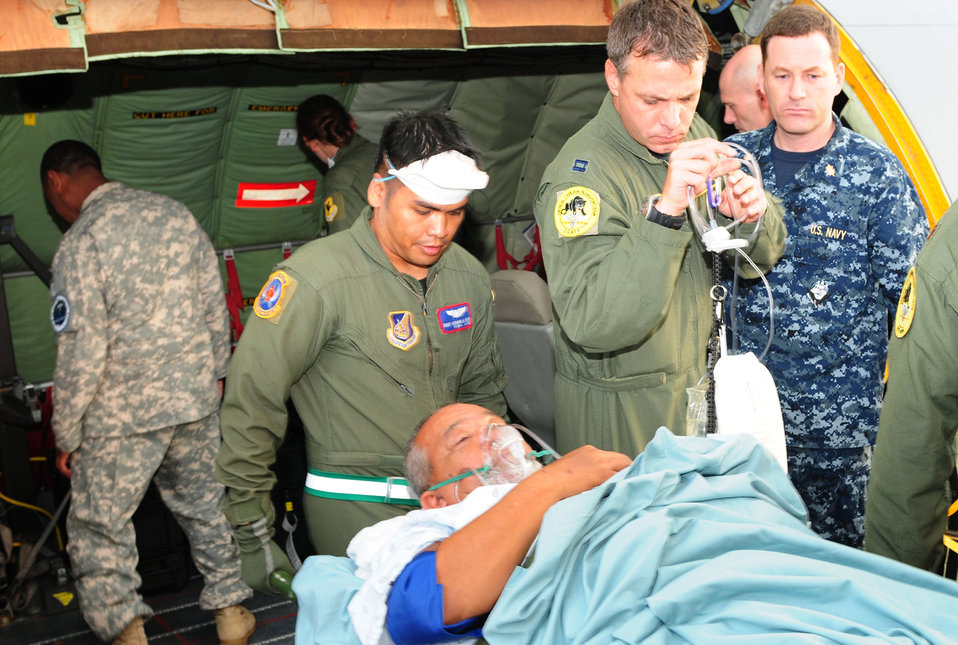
CCATT Transfer

Staff Sgt. Michael Reyes (left), Maj. (Dr.) Aaron Field, and Capt. John Michael Fowler transport a critically ill patient, Nov. 17, 2010, from a KC-135 Stratotanker to Tripler Army Medical Center, Hawaii. This is the first time CCATT East element has transported a critically ill patient during peacetime.